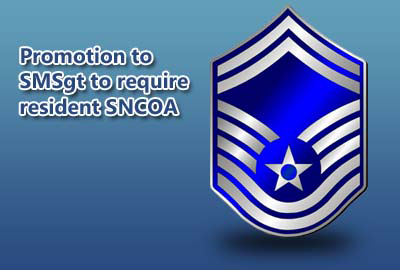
ROTC commander, instructor positions open for Total Force officers

Major Rod Reidy, Commandant of Cadets, is responsible for cadet military training and teaching AS 300 class. Maj. Reidy has been a space and missile officer for 12 of his 20 years in the Air Force and his assignments have included F.E. Warren AFB, WY, Vandenberg AFB, CA, Pentagon, Washington, DC, and most recently Offutt AFB, NE.